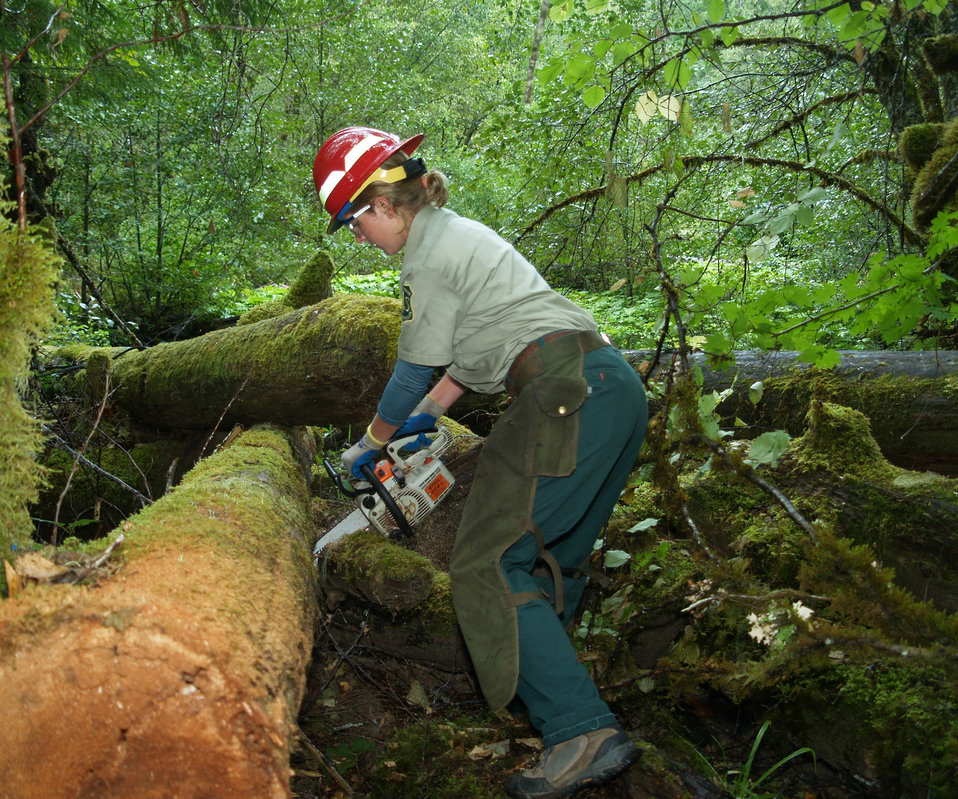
September 29, 2009. Estacada, OR. AmeriCorps intern Amy Barnhart cuts a fallen log during a streamside restoration project on the Clackamas River. The project enhances the spawning areas of native salmon on the river.